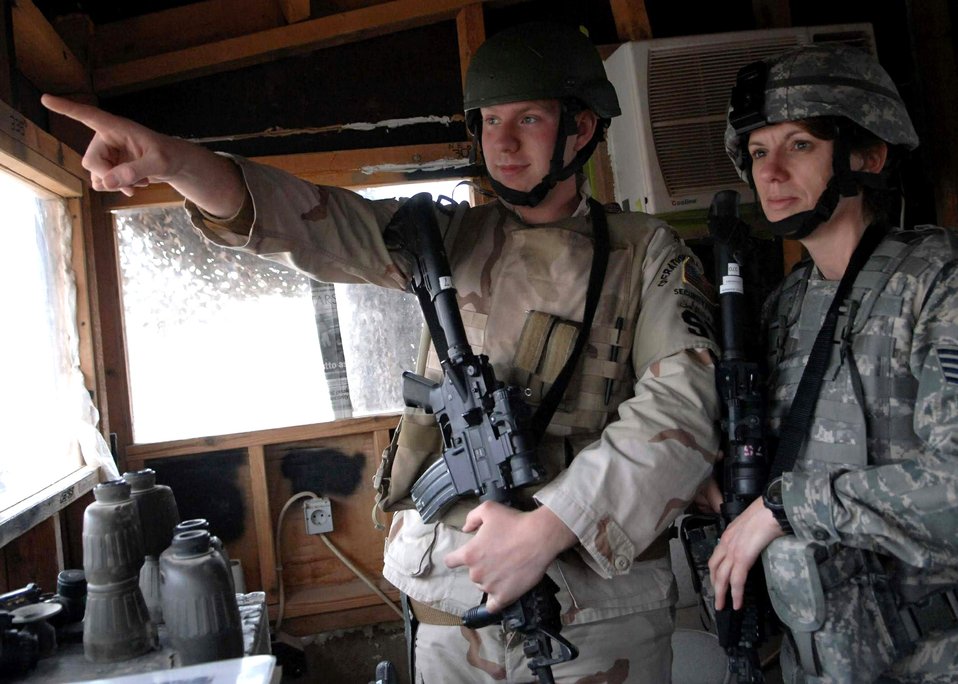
Mother replaces son on Kirkuk's front lines

Senior Airman Derrick Johnson teaches his mother, Staff Sgt. Tammi Johnson, base defense practices Jan. 22 at Kirkuk Air Base, Iraq. Airman Johnson is currently training his mother, who is soon scheduled to replace him. Both are reservists working for the 506th Expeditionary Security Forces Squadron.